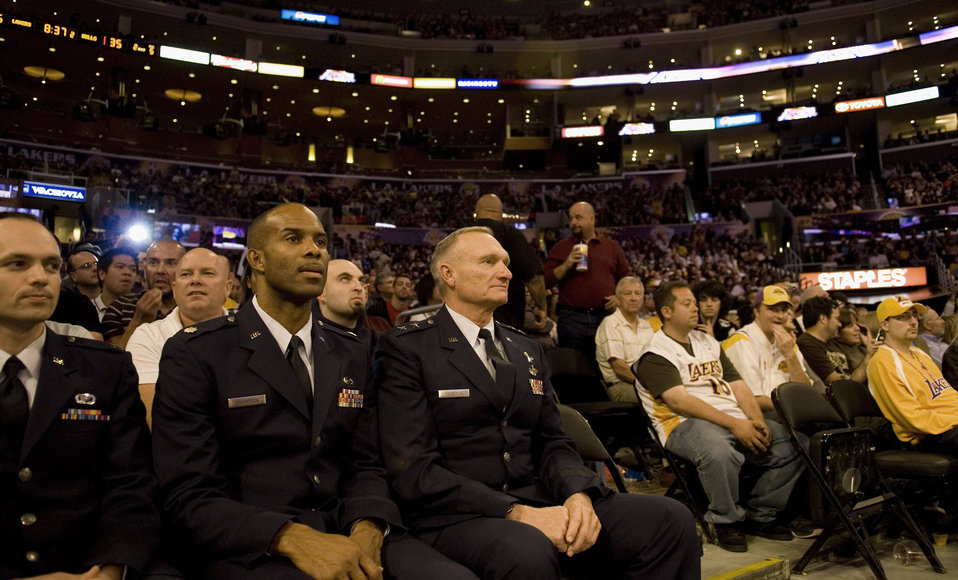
Air Force takes center stage as Bulls visit Lakers

Lt. Col. Ivan Thompson (left) watches the Chicago Bulls and Los Angeles Lakers basketball game with Maj. Gen. David L. Frostman Nov. 18 at the Staples Center in Los Angeles. Colonel Thompson, the Reserve adviser at Los Angeles AFB, Calif., performed the national anthem in front of nearly 20,000 fans at the game. General Frostman is the mobilization assistant to the Air Force Space Command commander.